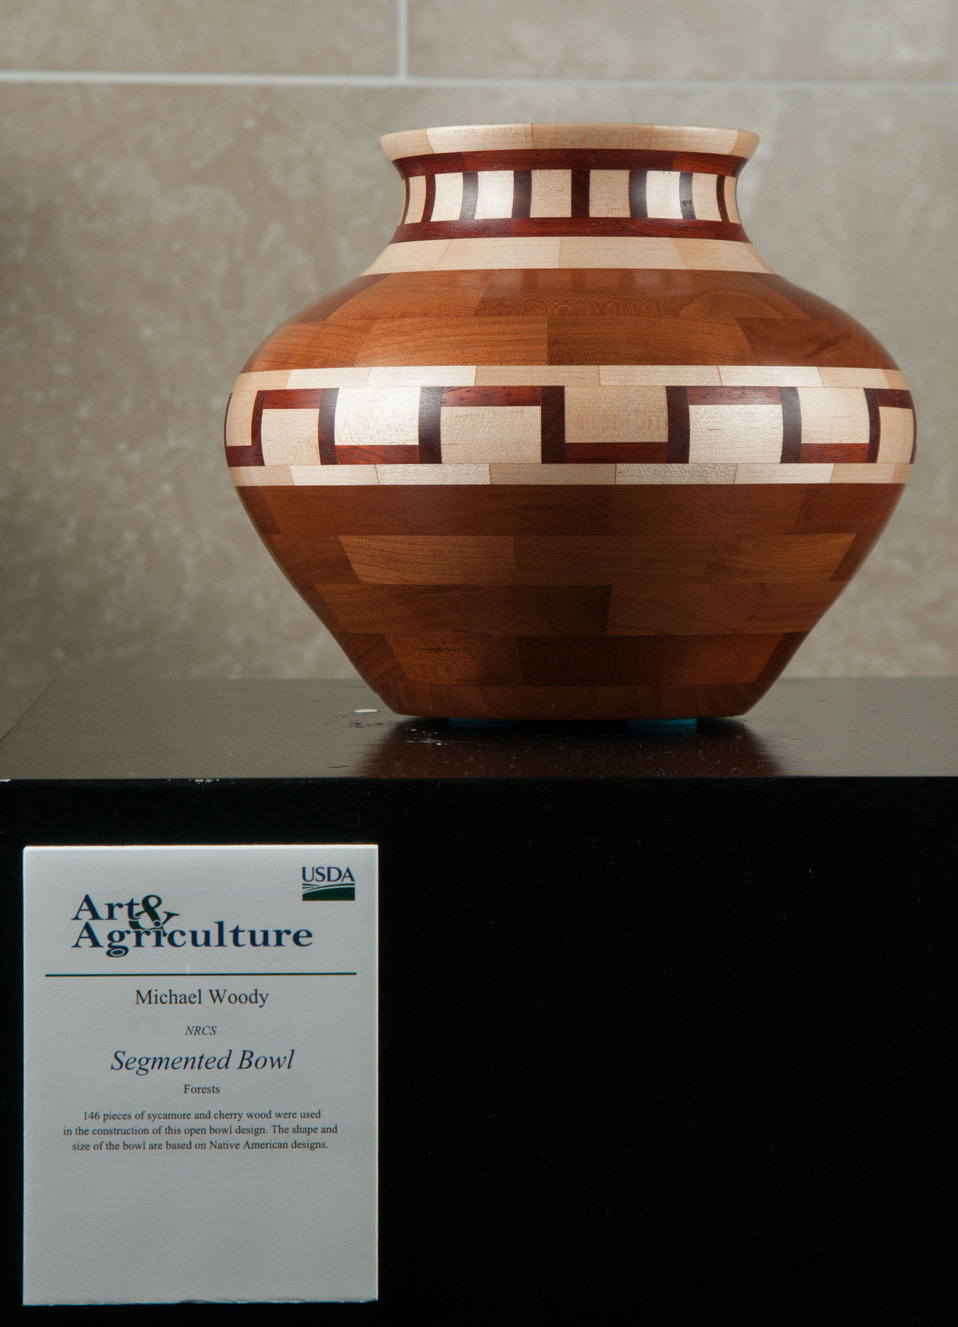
Online Viewer's Choice entries of the 2013 Art & Agriculture, Tuesday, July 9, 2013, in the South Building, Washington, D.C. Themes were expressed by employees from across the department and the contest was open to full-time and part-time USDA employees. Winning artwork will be displayed till the end of the year. U.S. Artistic expression is a creative outlet that is vital for an individual to grow and develop.